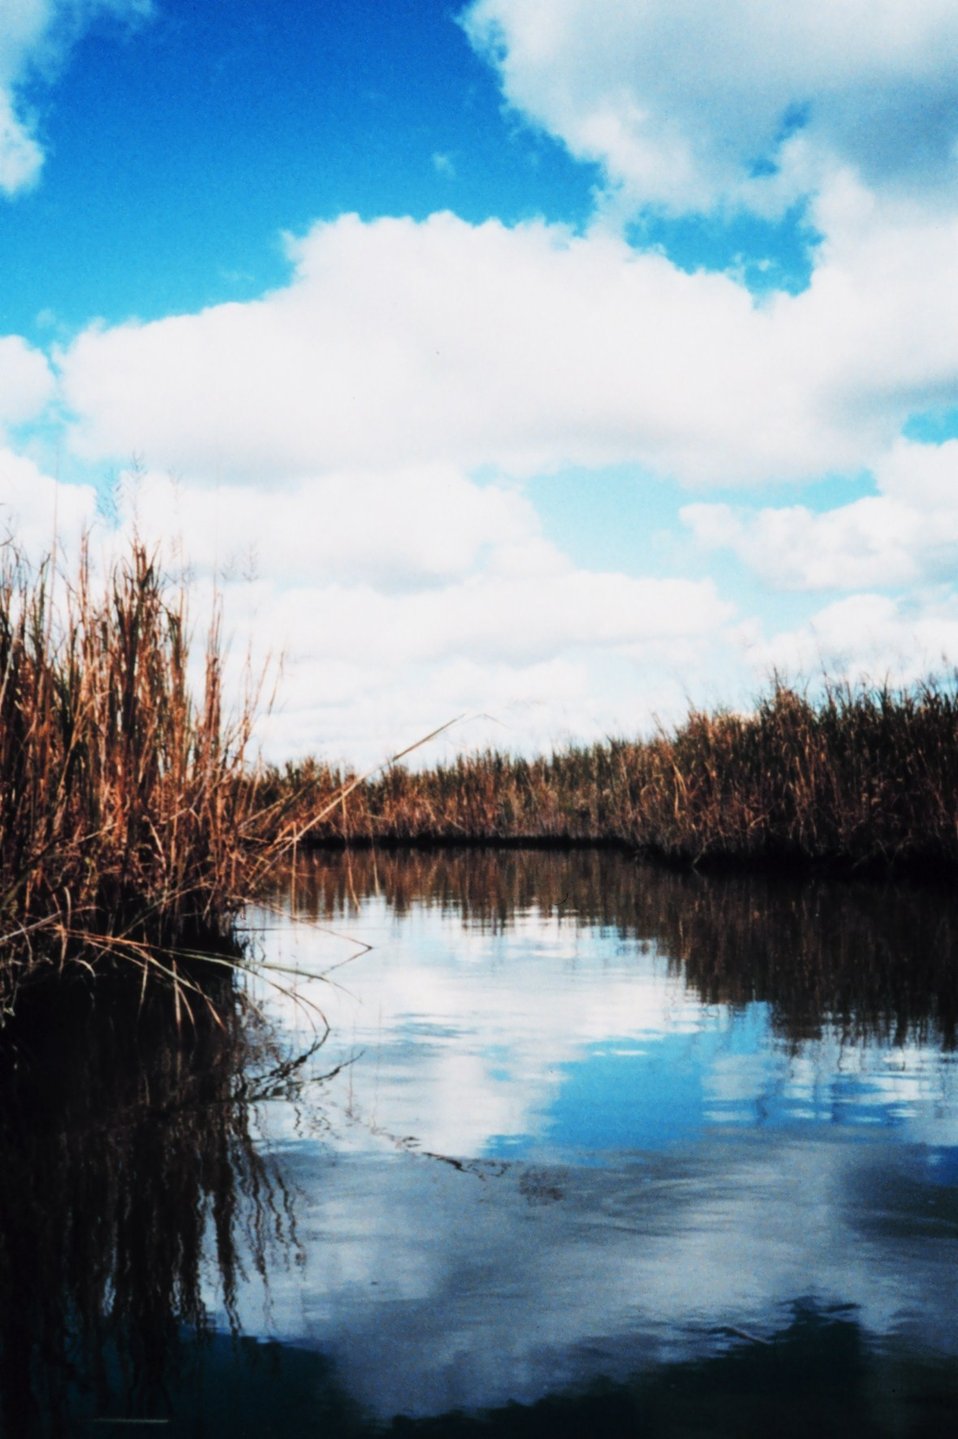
A quiet passage through marsh vegetation on the Patuxent